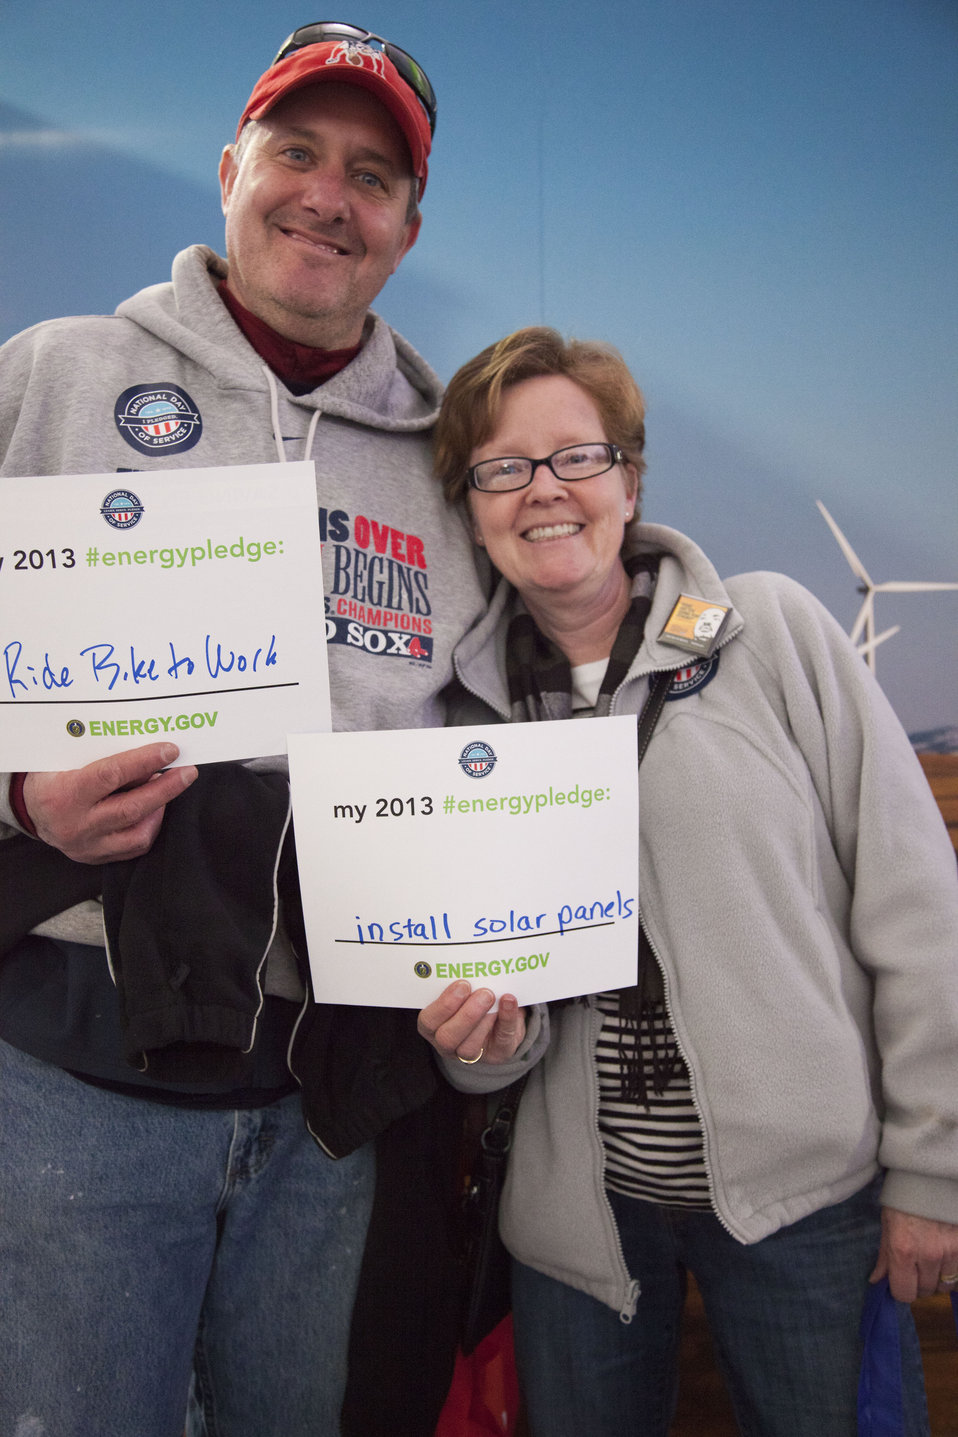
What's your #energypledge?